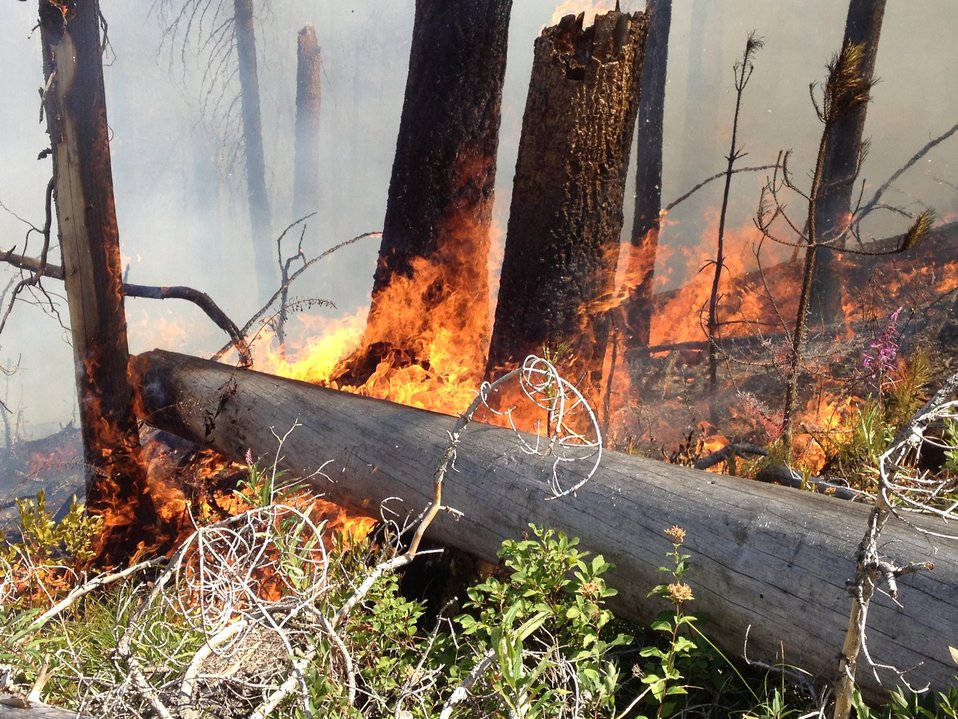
The Gold Pan Fire in the Bitterroot National Forest near Conner, MT began by lightning on Jul. 16, 2013 by lighting have consumed approximately 16,330 acres.